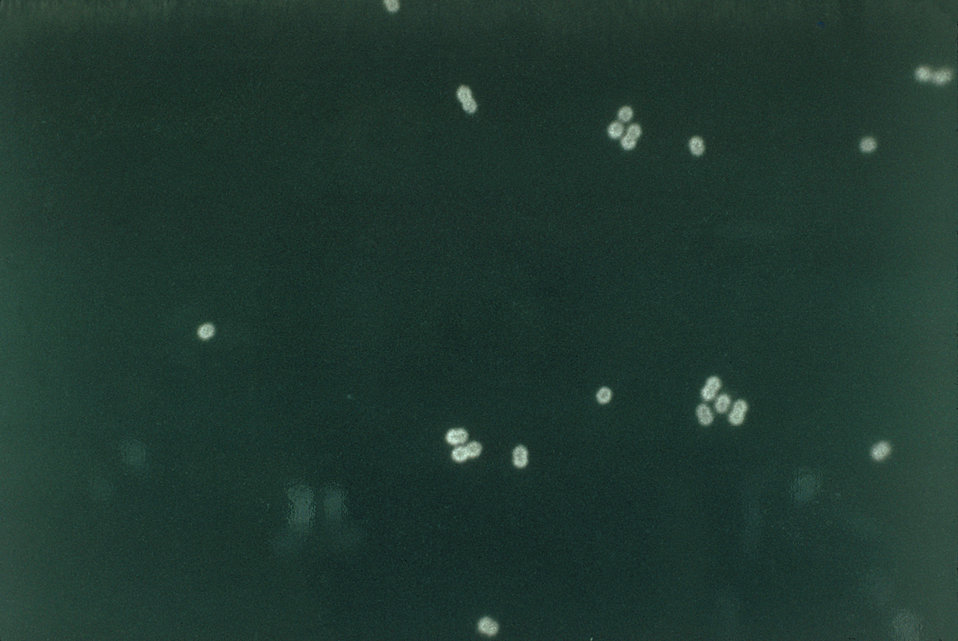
This micrograph depicts Streptococcus pneumoniae bacteria in cerebral spinal fluid using FA staining technique.